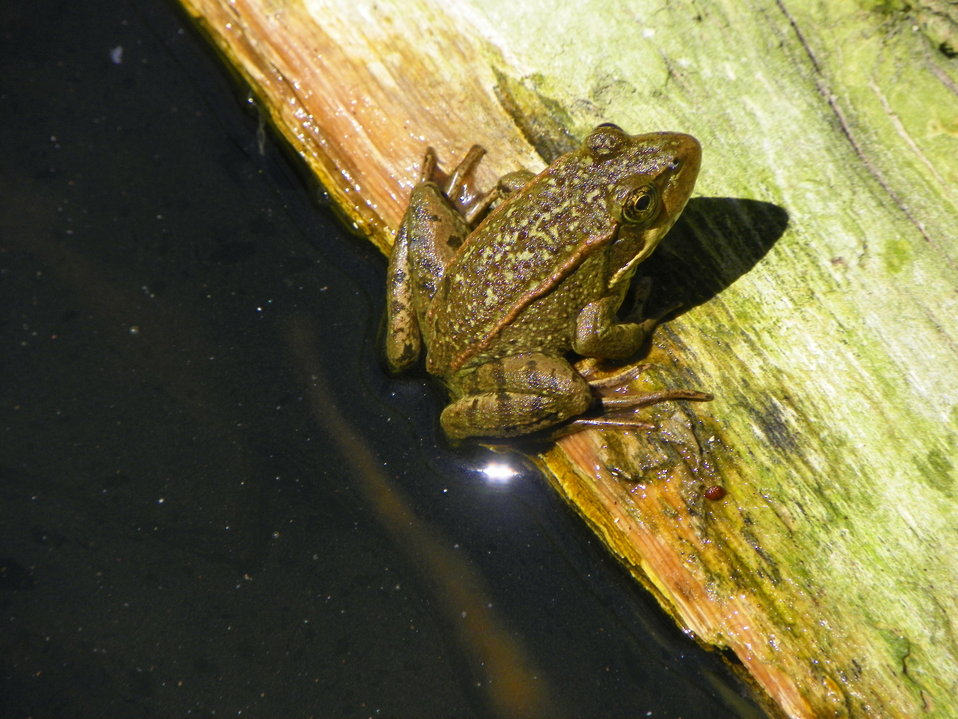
California Red-legged frog by Flo Gardipee

California Red-legged frog